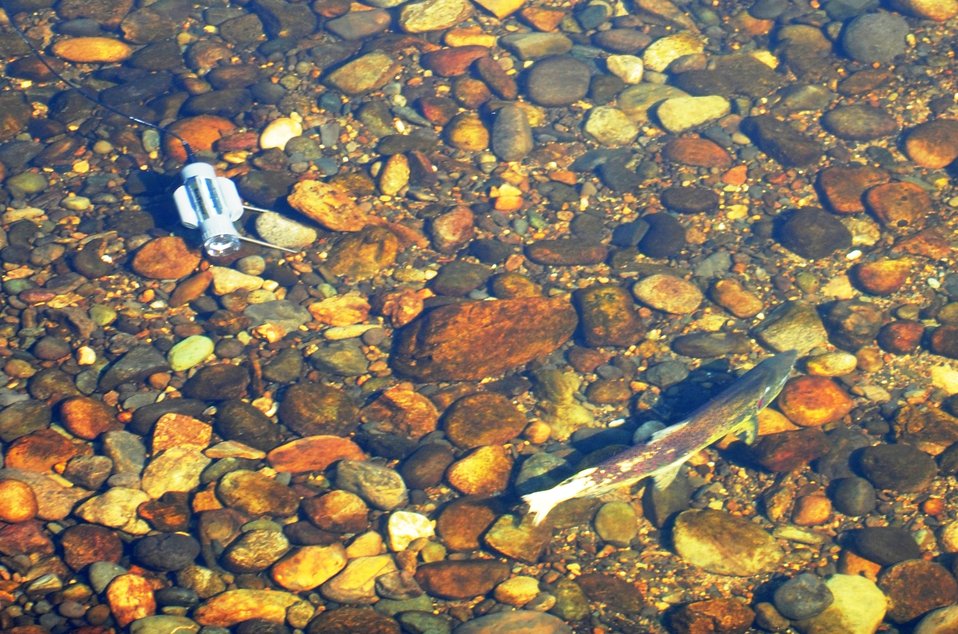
KNIGHT’S FERRY, Calif. (Nov. 16, 2010) – An underwater camera (left) captures images of a male salmon hovering around his nest during the second annual Stanislaus River Salmon Festival hosted by the U.S. Army Corps of Engineers Sacramento District’s Stanislaus River Parks here Nov. 14.
Chinook salmon and steelhead trout share the Stanislaus River with 25 other game fish. Male salmon typically remain near their nest until the young are born, protecting them from other predators. According to J.D. Wikert, habitat restoration coordinator for the U.S. Fish and Wildlife Service and one of the festival coordinators, more than 11,000 Chinook salmon returned to their spawning ground on the river this year’s fall run. An estimated 3,000 people attended the free, family-friendly event, which was aimed at educating young people on the protection efforts for salmon and its habitat.